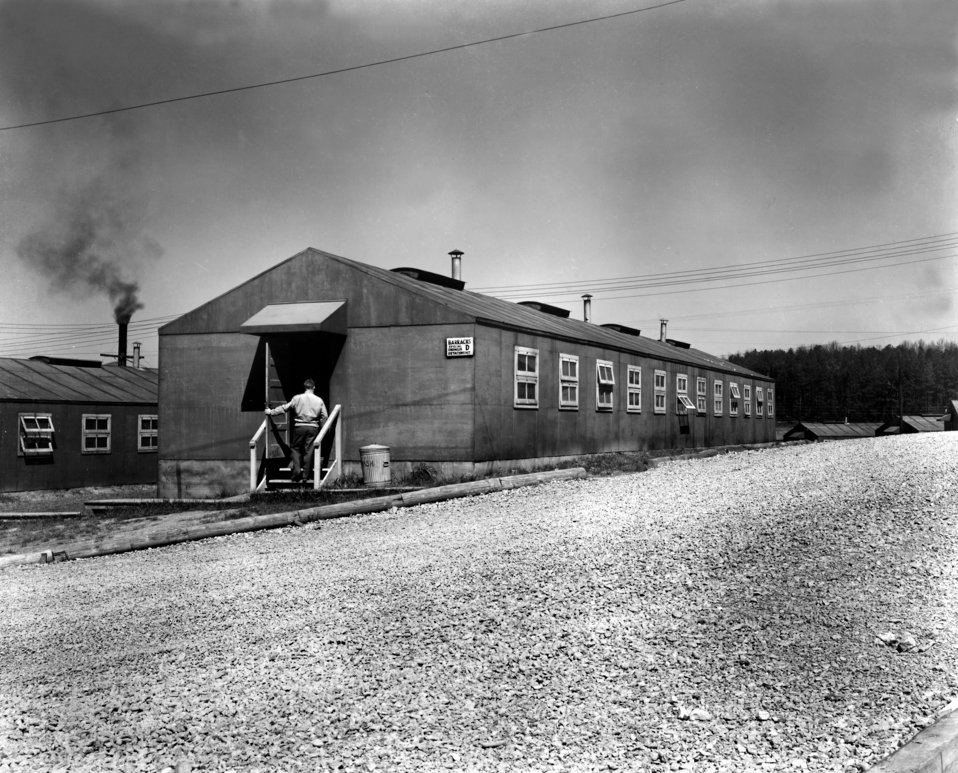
Special Engineering Barracks Oak Ridge K-25

MED55 DOE photo Ed Westcott 1944 Oak Ridge Tennessee